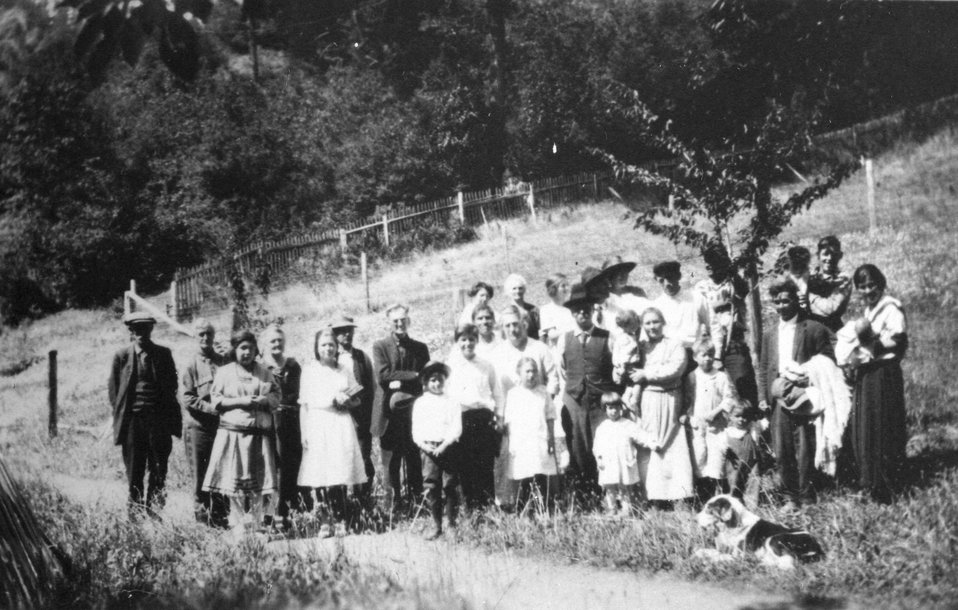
Picnic group a George Billings Ranch, at Mule Creek